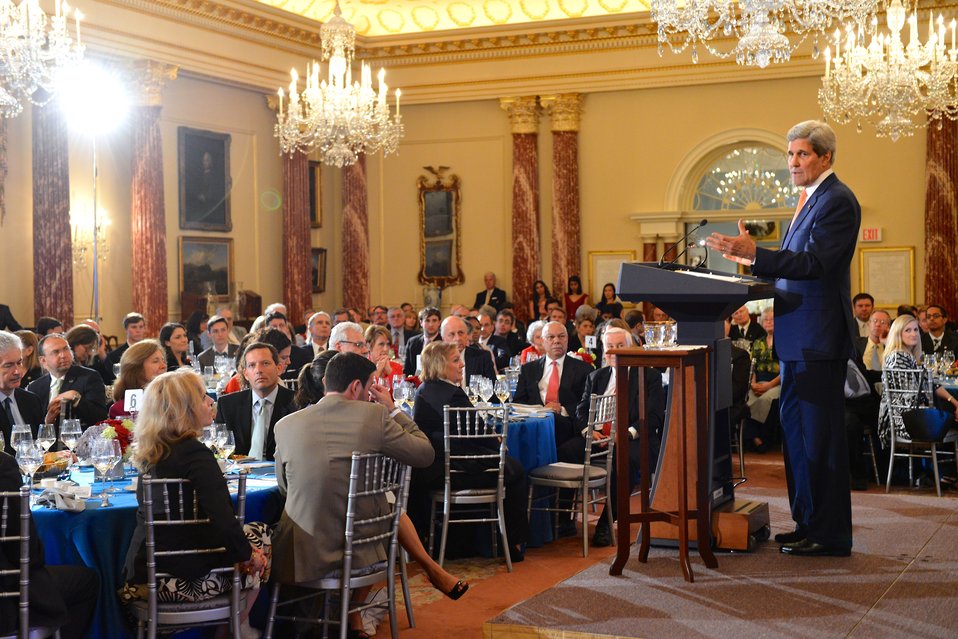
Secretary Kerry Celebrates the 90th Anniversary of the U.S. Foreign Service

U.S. Secretary of State John Kerry delivers remarks at an event celebrating the 90th Anniversary of the United States Foreign Service at the U.S. Department of State in Washington, D.C., on May 22, 2014. The modern Foreign Service was created on May 24, 1924, with the passage of the Rogers Act establishing the current merit-based, professional Foreign Service.